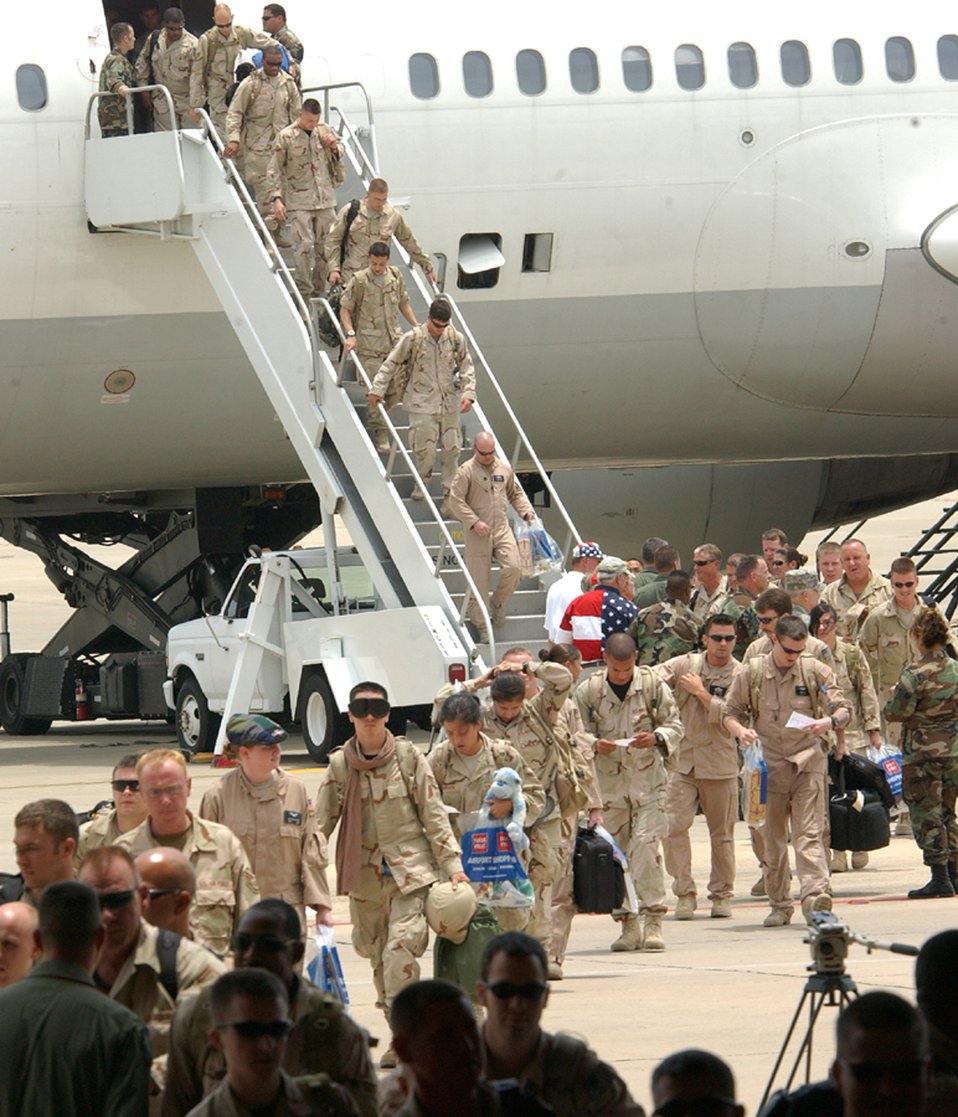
Happy holiday homecoming

Airmen returning home to Hurlburt Field, Fla., step off their plane toward the arms of the loved ones they have not seen for months while they were deployed to Iraq and Afghanistan. More than 200 Airmen returned home July 4.